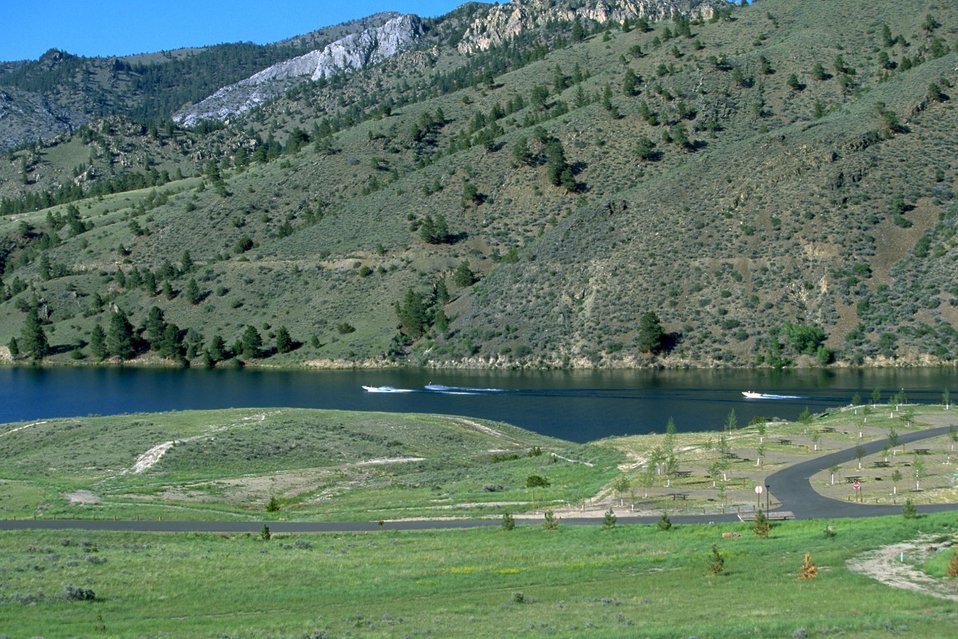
Water skiers on Hauser Lake